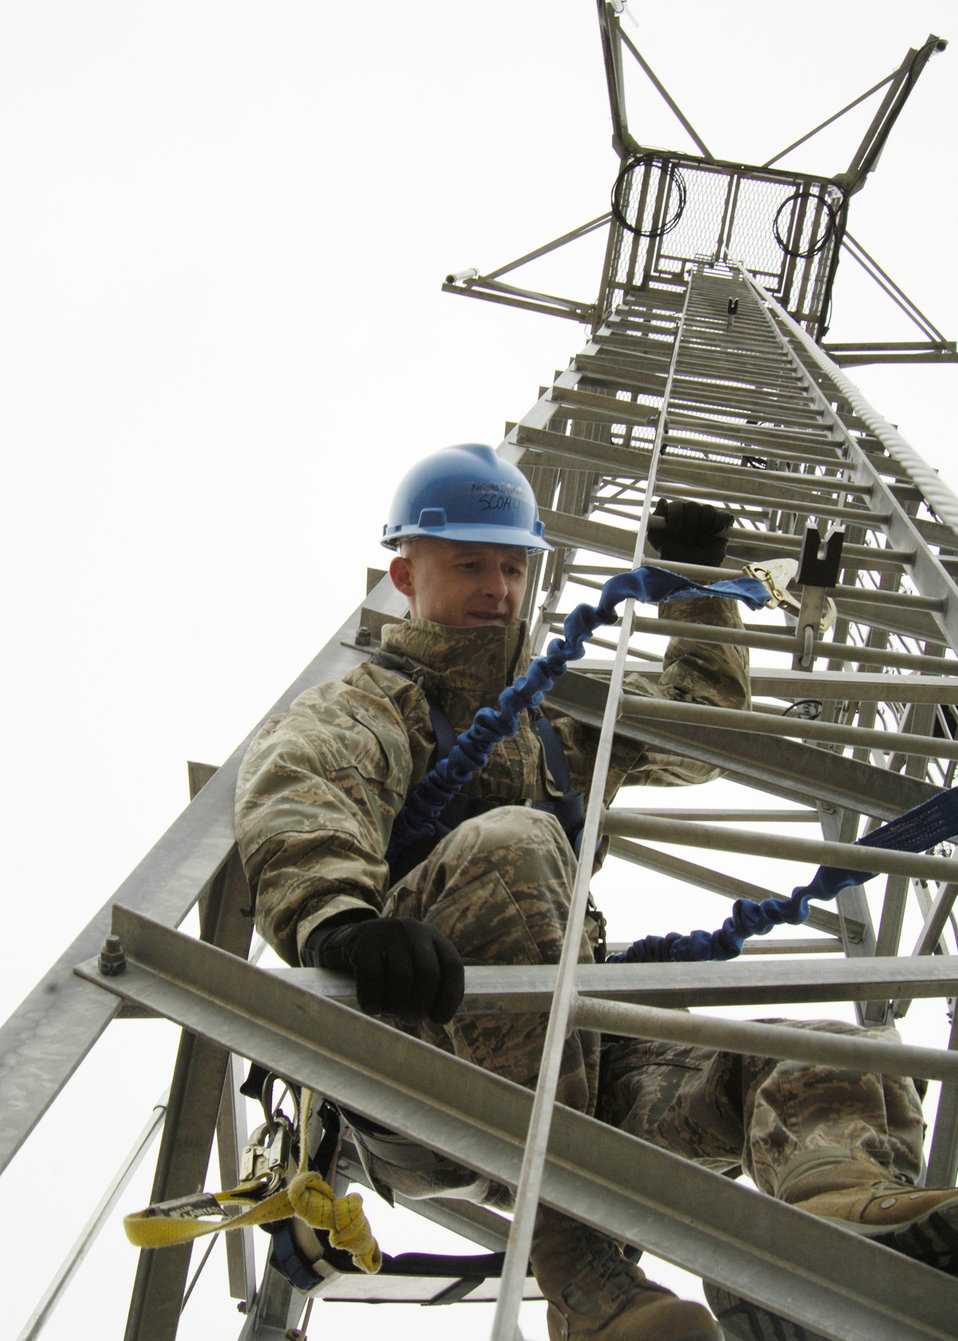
No fear of heights here

Staff Sgt. Douglas McNeill climbs a 70-foot radio tower March 16, 2010, at McConnell Air Force Base, Kan. Airmen provide periodic and preventative maintenance on equipment mounted on the tower to ensure proper communication signals. Sergeant McNeill is airfield systems NCOIC with the 22nd Communications Squadron.